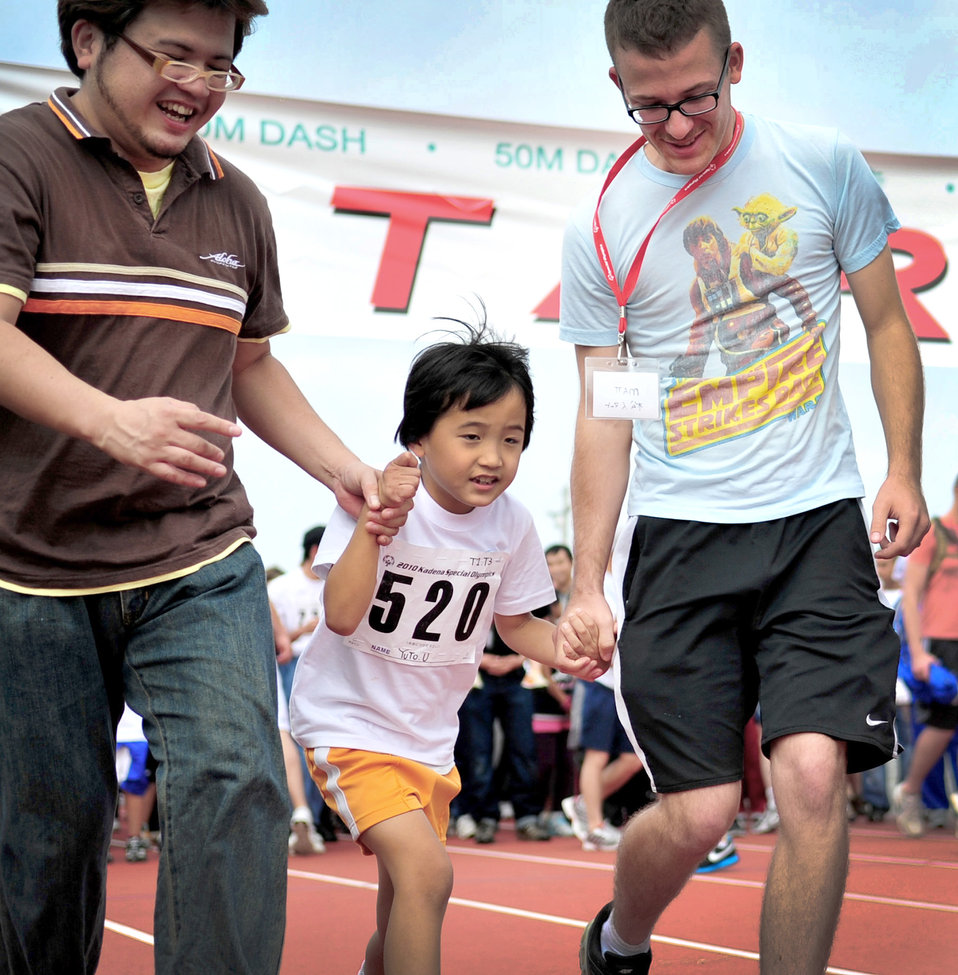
Kadena Special Olympics creates bond for new Airman

Airman 1st Class Matthew Renfro runs with Yuto Uehara and his father in the 30-meter dash Nov. 6, 2010, during the Kadena Special Olympics at Kadena Air Base, Japan. Airman Renfro was paired with Yuto, a young athlete during the event.